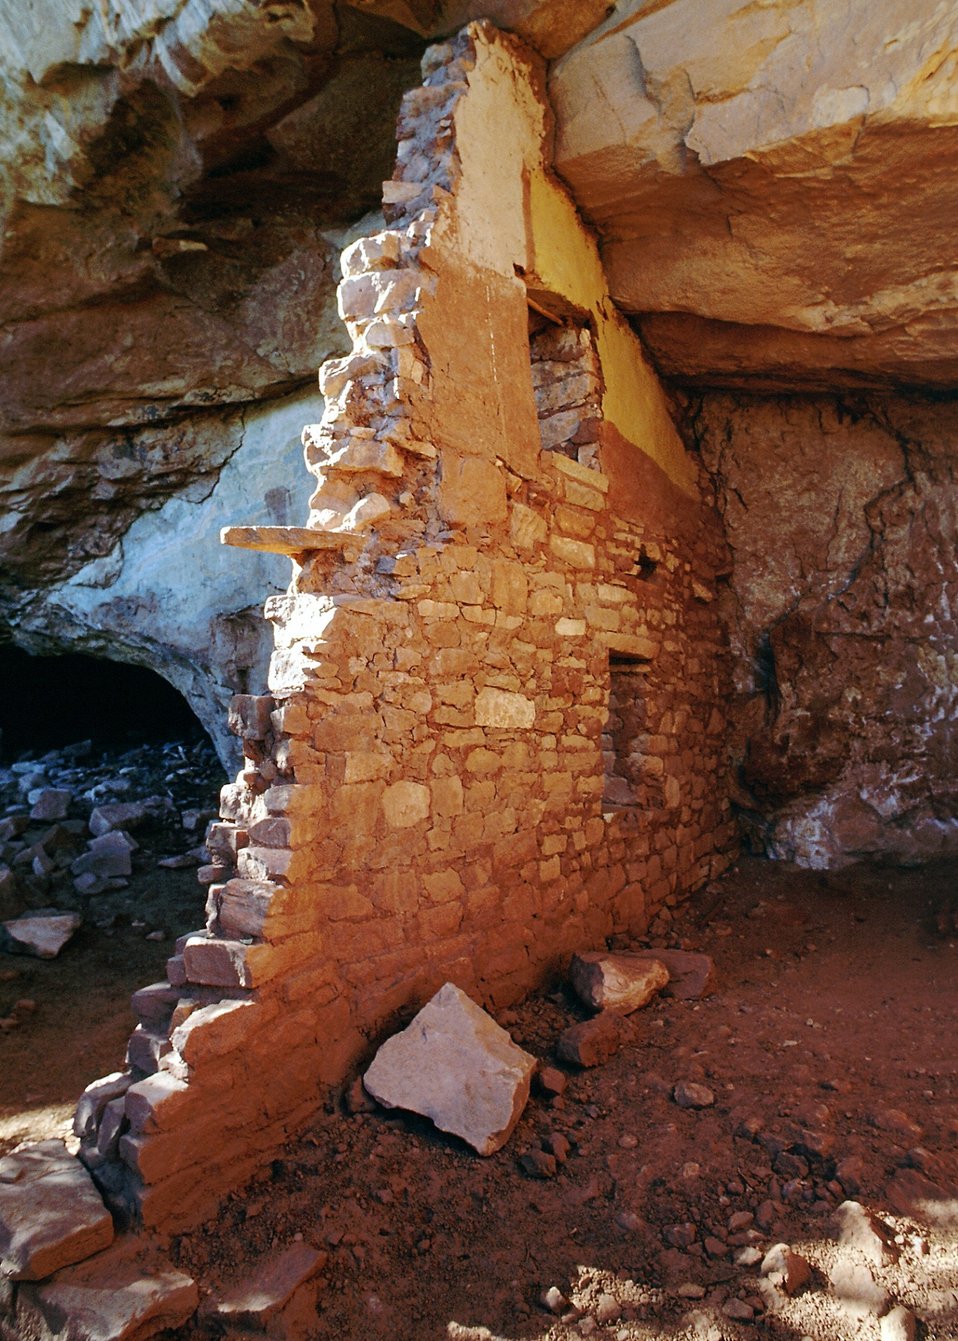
Brick wall at center